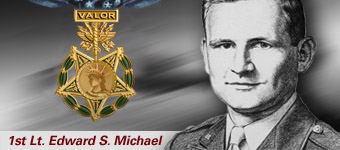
1st Lt. Edward S. Michael, a B-17 Flying Fortress pilot, received the Medal of Honor for conspicuous gallantry and intrepidity above and beyond the call of duty during a heavy bombing mission over Germany.